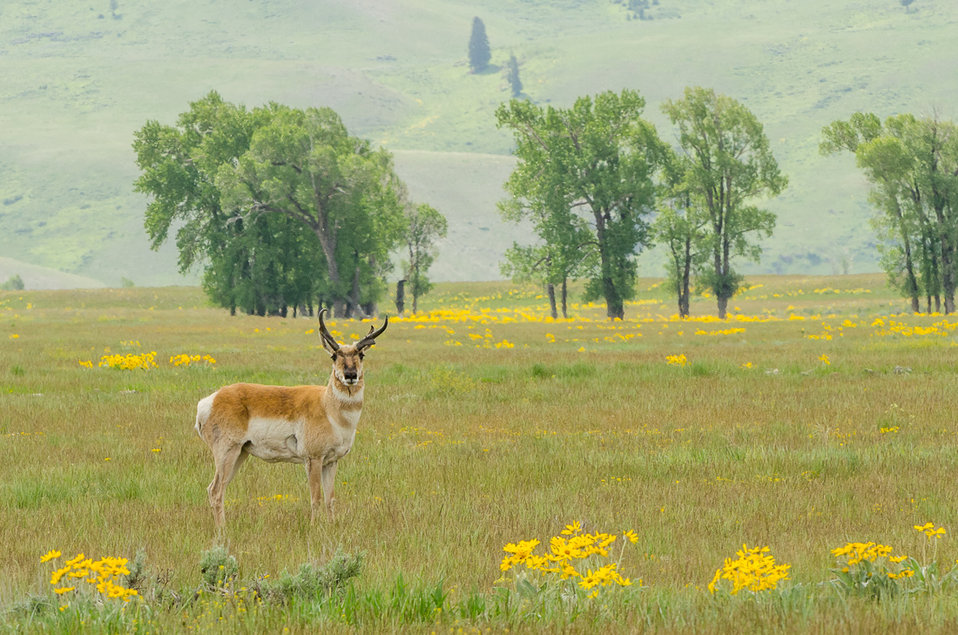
In a Golden Field

A pronghorn stands in a field dotted by arrowleaf balsamroot, a yellow flower in the sunflower family (Asteraceae) commonly found in mountain fields in the western United States.

Credit: USFWS / Barbara Hayton, National Elk Refuge volunteer